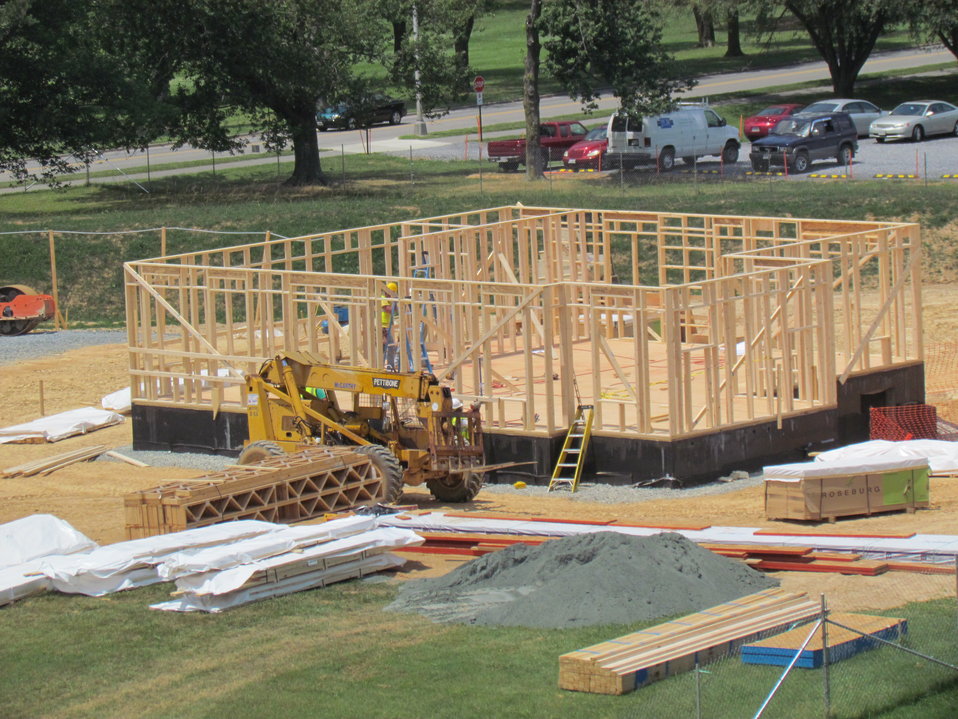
Net-Zero Energy Residential Test Facility - Picture showing first floor framing and construction site.